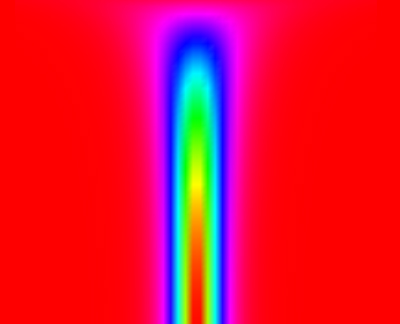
Solitons

Solitary waves that run a long distance without losing their shape or dying out are a special class of waves called solitons. This is a conventional 'dark' soliton.

See also www.nist.gov/pml/div699/soliton 121509.cfm.

Credit: I. Satija et al., JQI